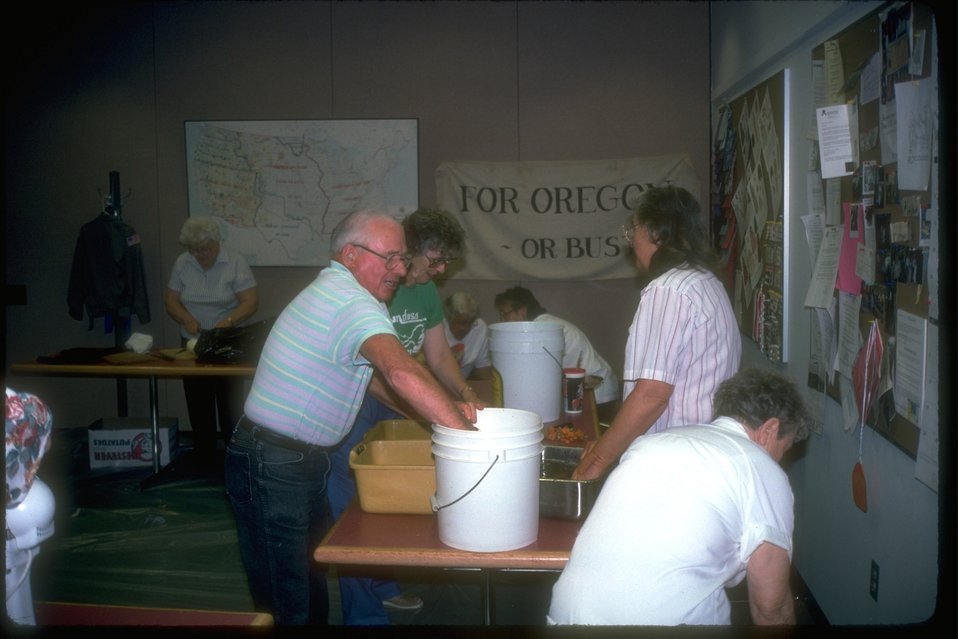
Volunteers working at a cultural event about Oregon's history. Sign in background reads, "For Oregon or Bust.